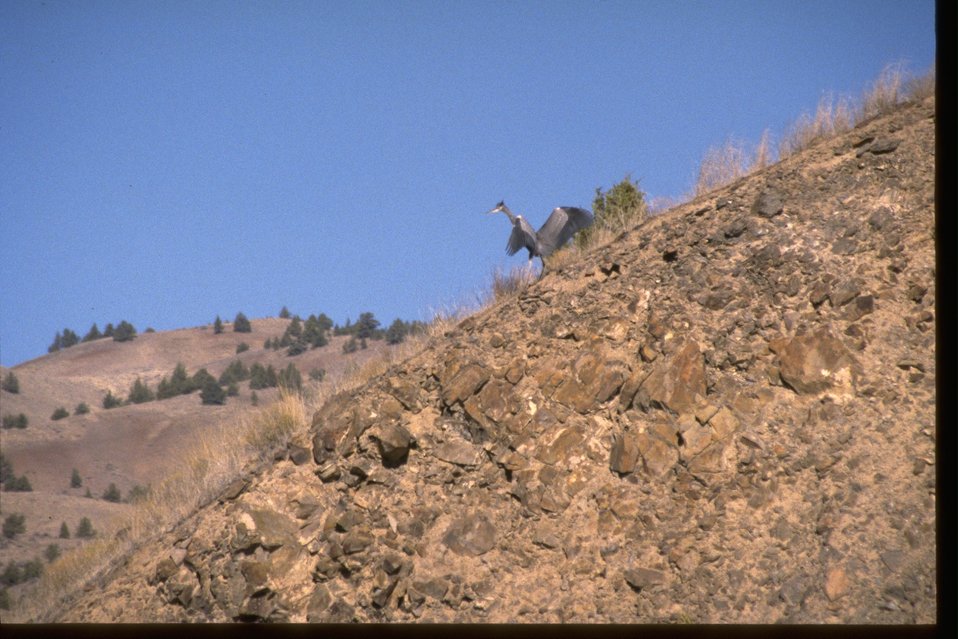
Heron on rock slope above John Day River.